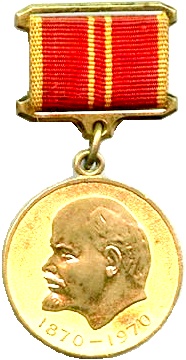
Soviet 100th Birthday Of Lenin Medal.